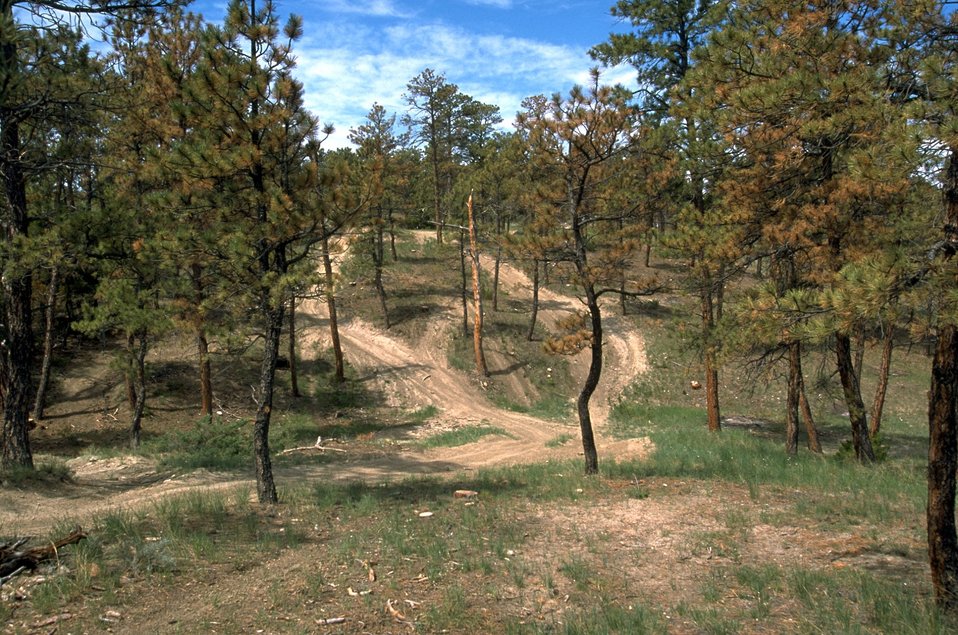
Off highway Vehicle (OHV) trails in Area 1 of the Shepherd Recreation Area